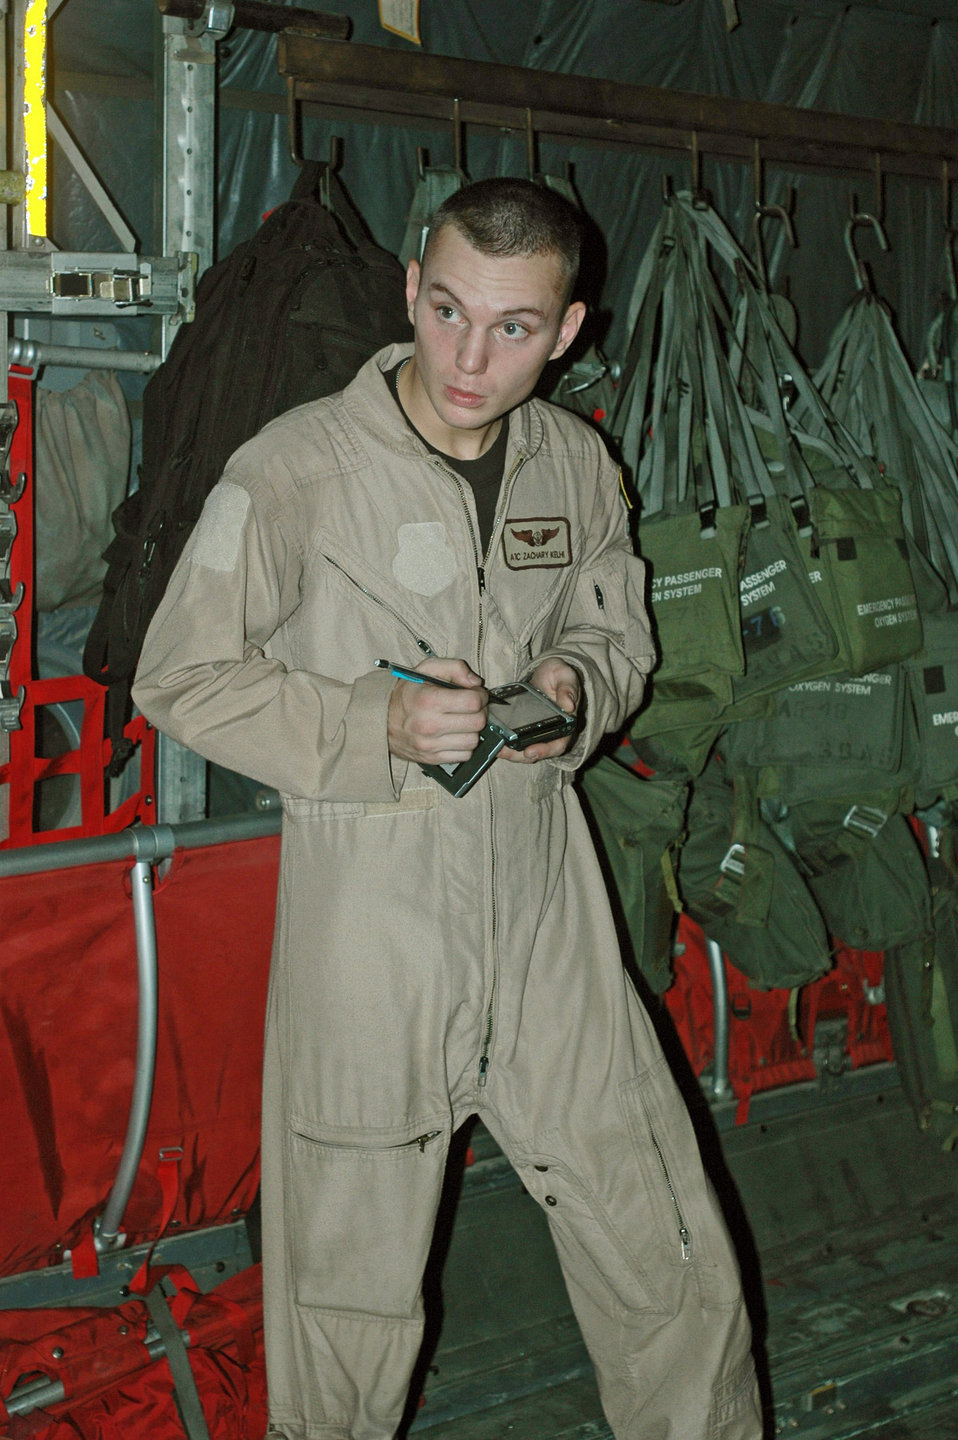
Loadmasters: night life of C-130 mission hackers

Airman 1st Class Zachary Kelhi calculates weights and balances of cargo to be loaded onto his C-130 Hercules for a flight from Balad Air Base, Iraq, to Baghdad International Airport. Airman Kelhi is a loadmaster with the 746th Expeditionary Airlift Squadron.